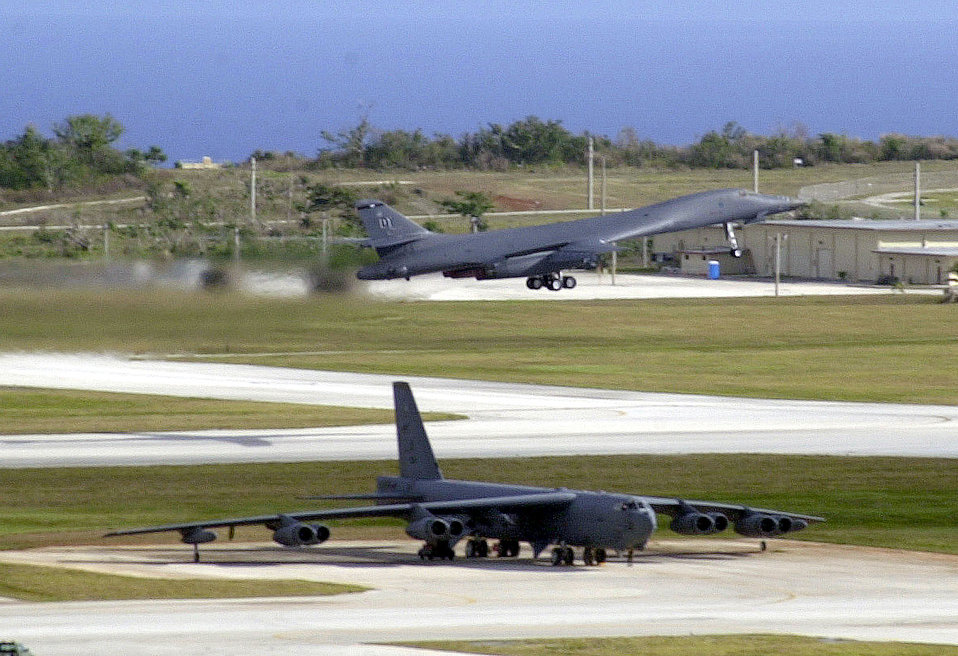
Bombers at Guam

OPERATION IRAQI FREEDOM -- During last day of surges a B-1 takes off past a B-52 on the ramp at Andsersen Air Force Base, Guam, April 2. Demonstrating mission sortie turn-around within set time limits.